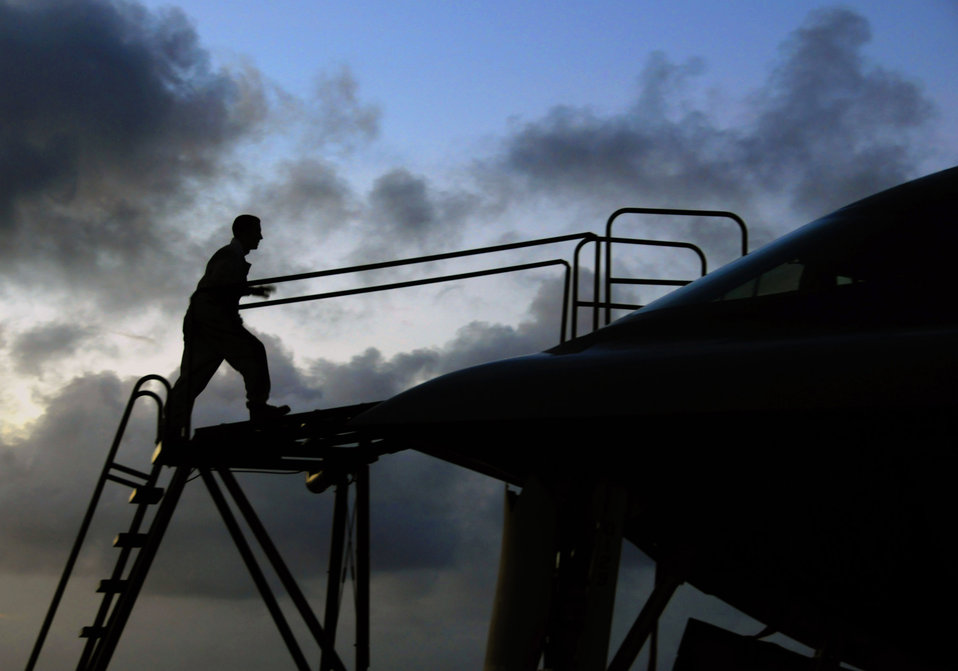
Last look of the day

A 36th Expeditionary Maintenance Squadron crew chief conducts post flight maintenance on a B-2 Spirit after its arrival Feb.23 at Andersen Air Force Base, Guam. The B-2 is deployed from Whiteman Air Force Base, Mo.